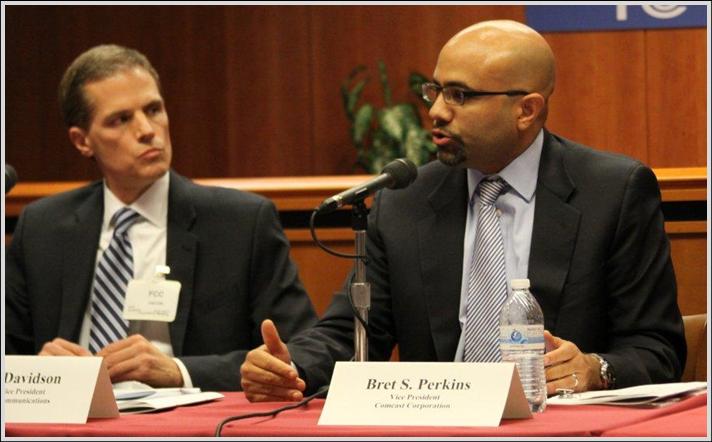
Dave Davidson and Bret Perkins

Panel 4: Discussion of Industry Best Practices to Increase Broadband Adoption Among the Various Technologies